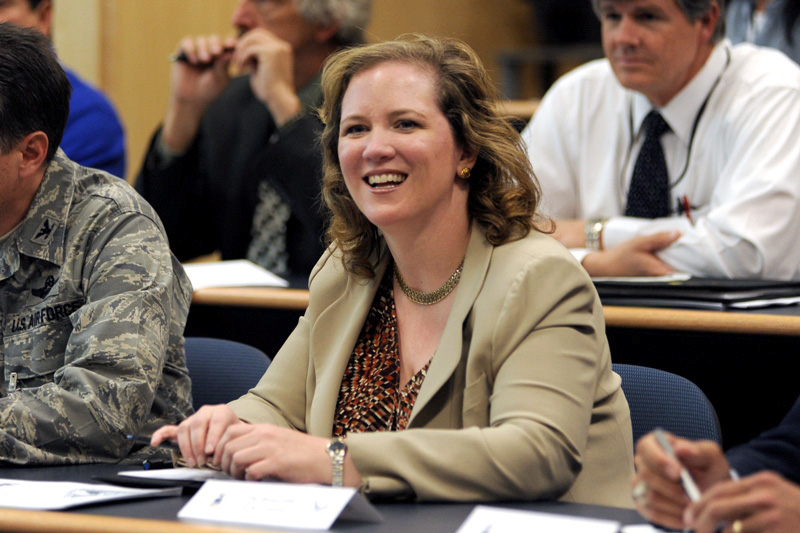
Air Force officials kick-off energy awareness month

Undersecretary of the Air Force Erin Conaton speaks with members of the
U.S. Air Force Academy's Falcon Green energy triad during a meeting to discuss energy awareness and research initiative Oct. 1, 2010, at the Academy in Colorado Springs, Colo.